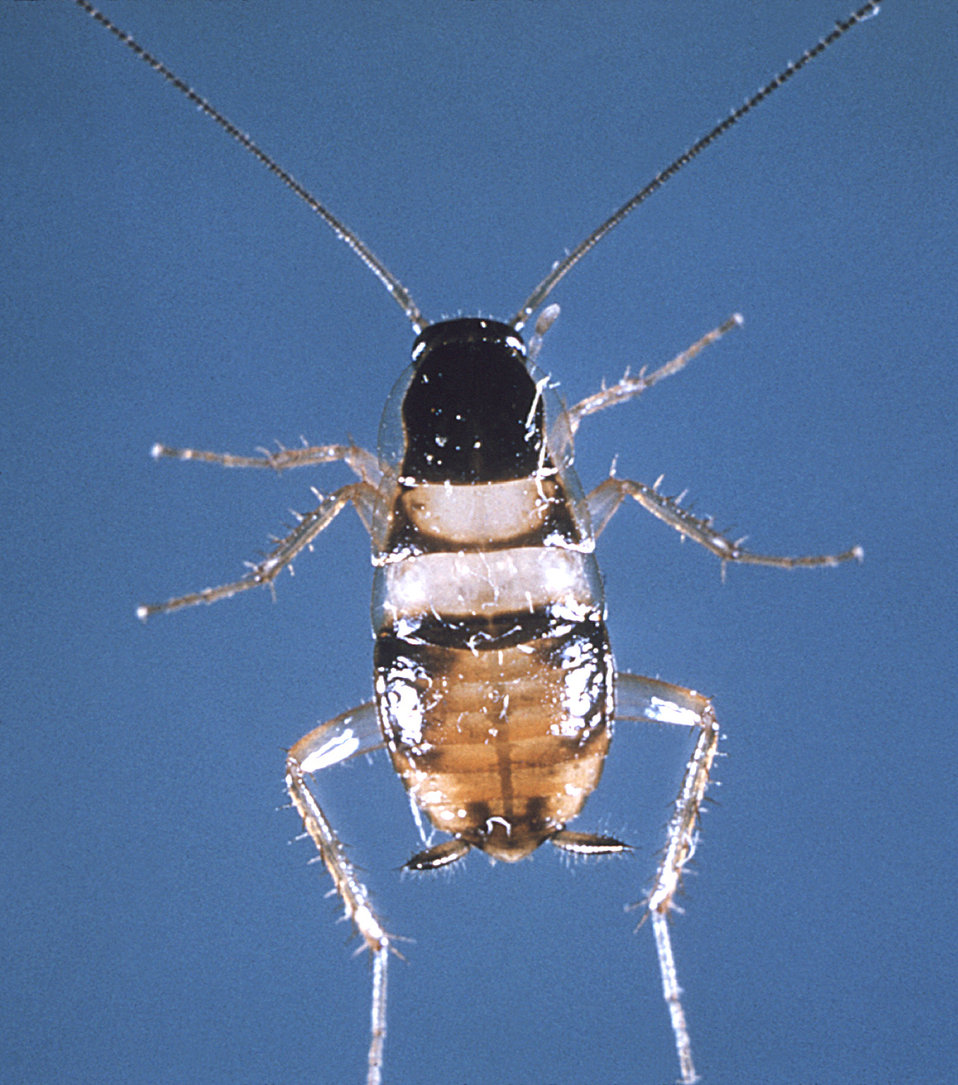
This is a dorsal view of an adult "brown banded" cockroach, Supella longipalpa.